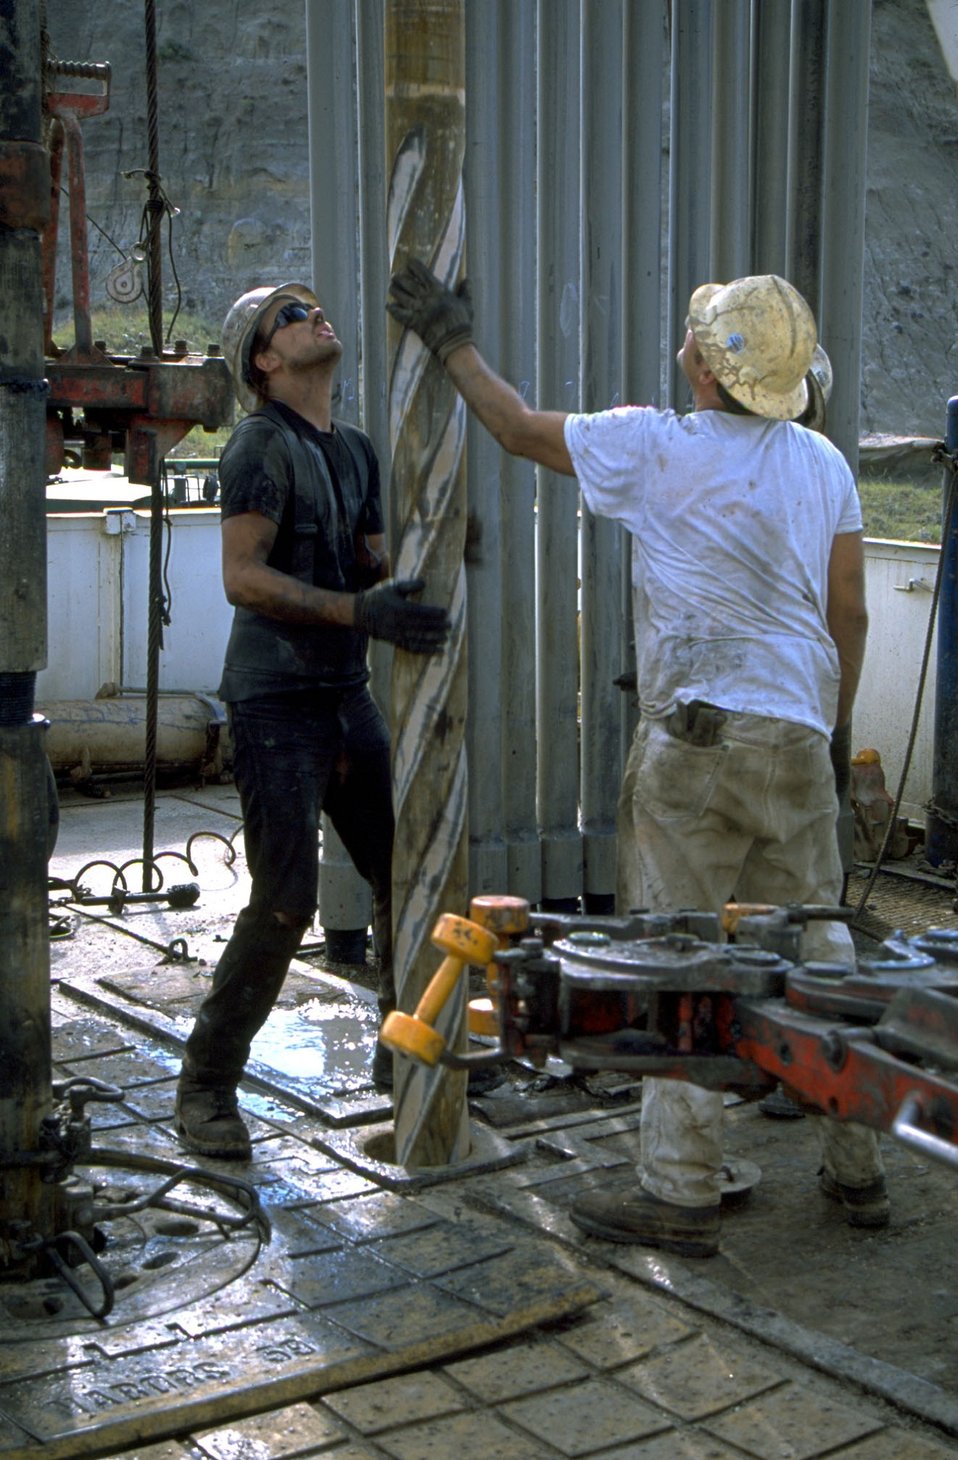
Roughnecks running drill collar in the hole